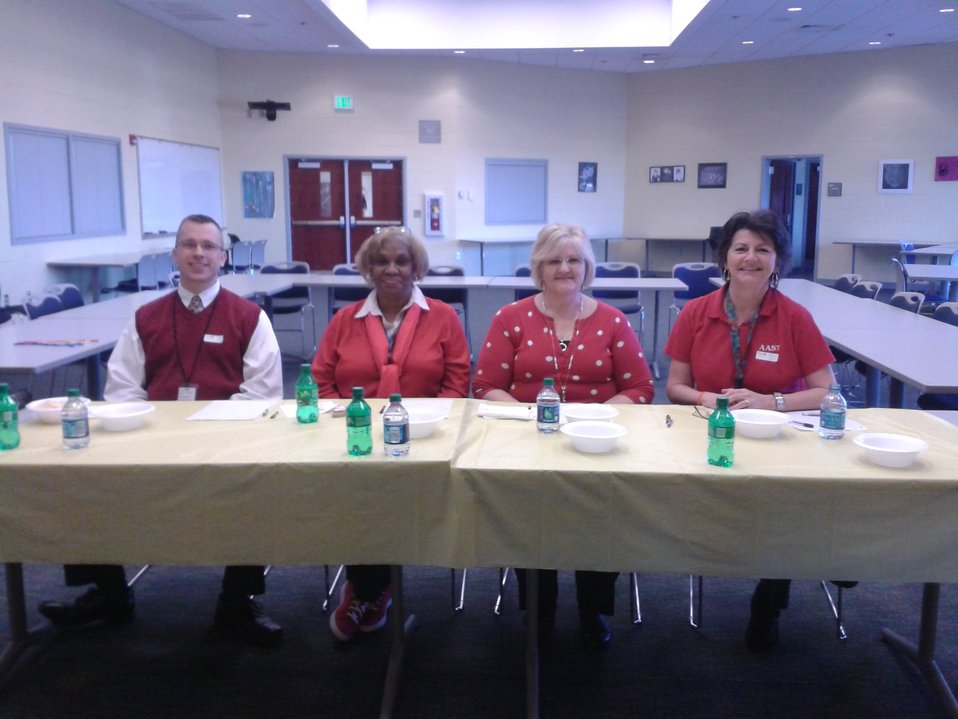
South Carolina's NDFW 2013

Horry County Schools, S.C., Panel for Academy for the Arts and Science, and Technology NDFW 2013 Event.